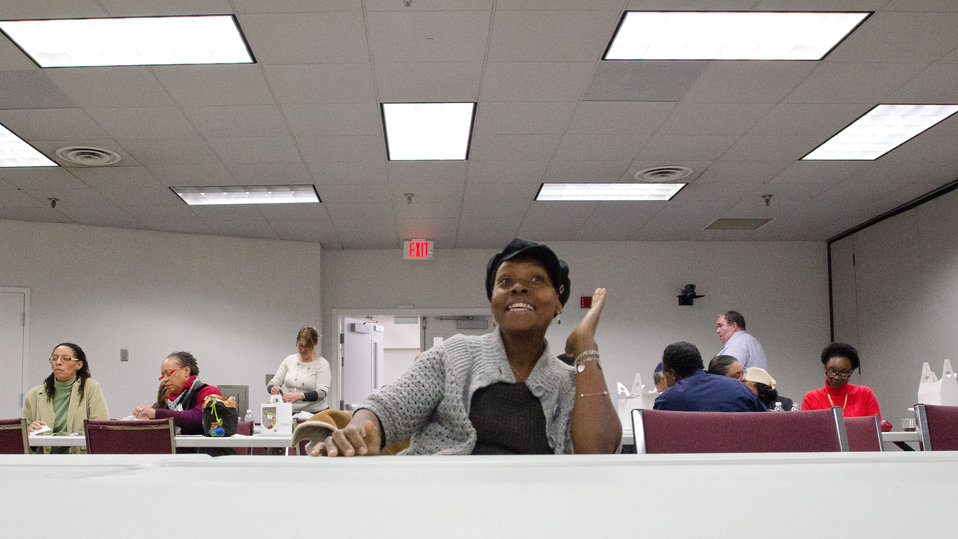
Farmer's spirits grew as the day progressed at the “Virginia State University (VSU), U.S. Department of Agriculture (USDA) and Virginia Farmers Working Together” outreach workshop in the VSU, L. Douglas Wilder building on Thursday, March 7, 2013, in Petersburg, VA. Farmers shared and learned new ways to do more with their current assets and capabilities, and to make their businesses grow. Farmers were able to talk with representatives from several mission areas that could potentially benefit their businesses.